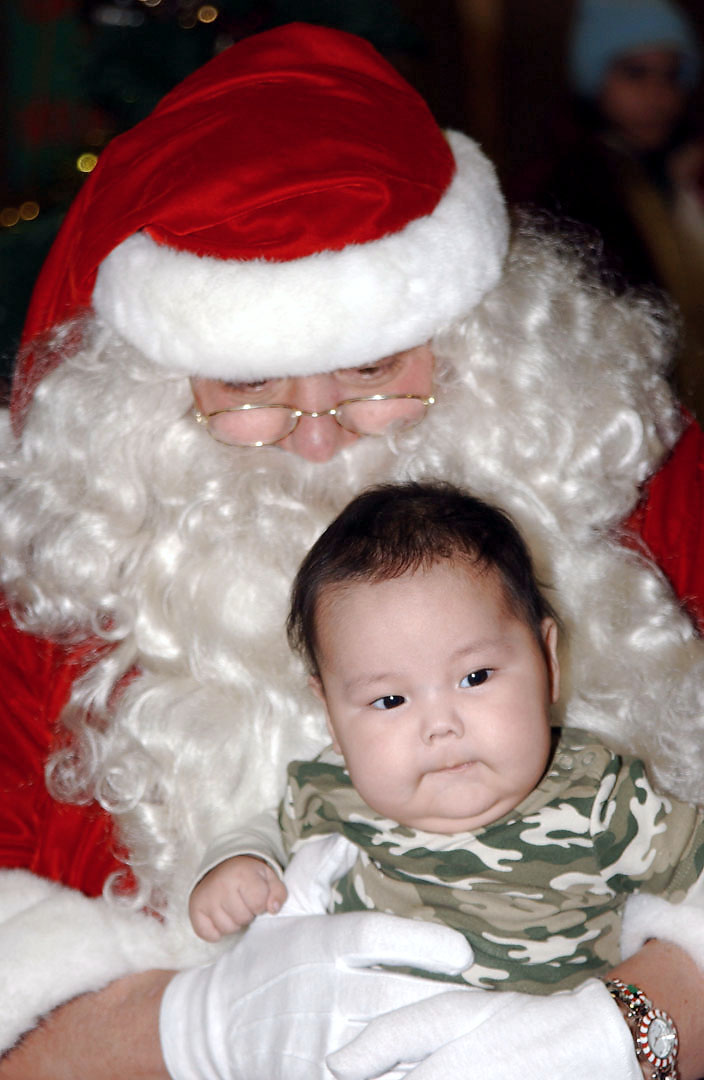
Alaska Guard continues Operation Santa Claus tradition

Santa Claus holds one of the children of Kivalina while passing out gifts during Operation Santa Claus Dec. 6 in Kivalina, Alaska. Operation Santa Claus, an Alaska National Guard community relations and support program, provides toys, books and school supplies for young people in communities across the state.